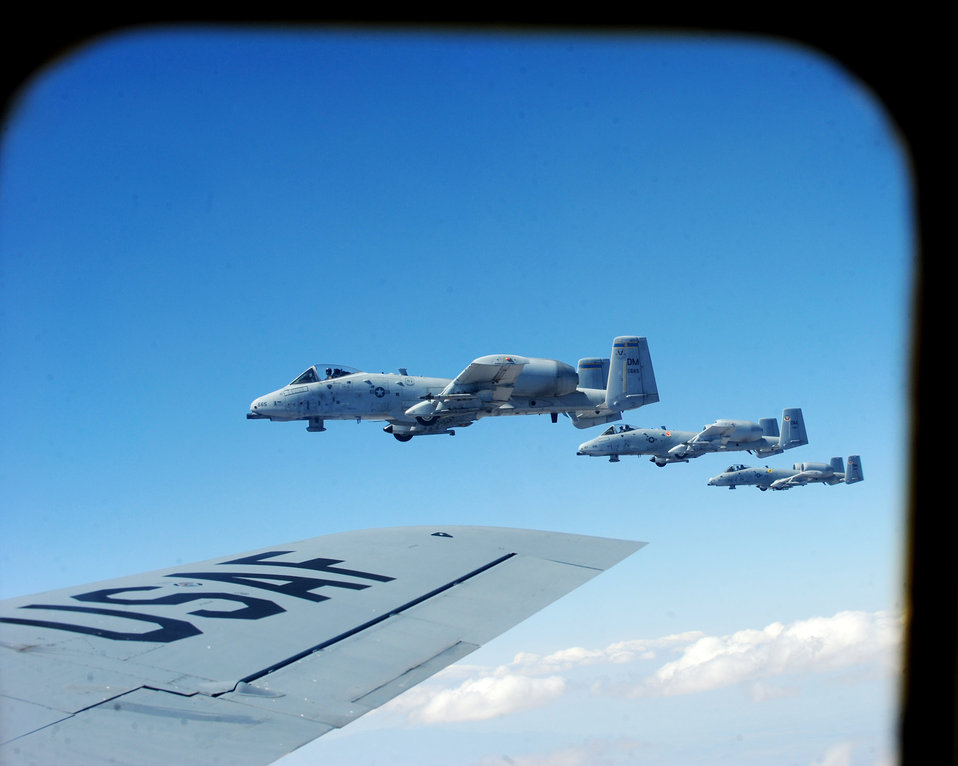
Lining up for fill-up

Three A-10C Thunderbolt IIs fly in formation beside a KC-135 Stratotanker April 27, 2010, during an aerial refueling mission over Southern Arizona. The A-10 pilots are from the 358th Fighter Squadron at Davis-Monthan Air Force Base, Ariz.